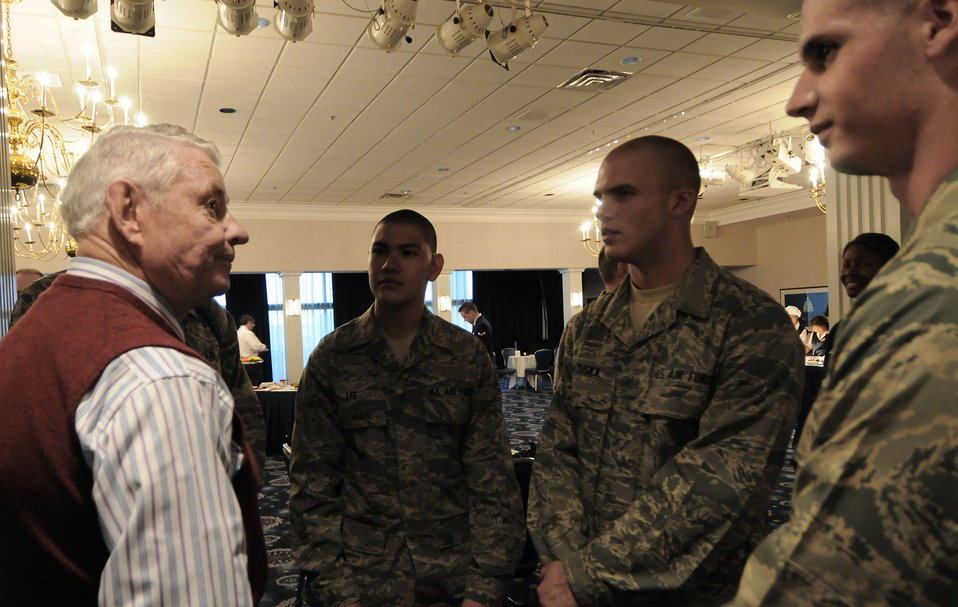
Chief master sergeants of the Air Force gather for dedication

The fifth Chief Master Sgt. of the Air Force Robert D. Gaylor interacts with Air Force Honor Guard trainees after a Chief Master Sergeant of the Air Force Room dedication ceremony May 26 at the Bolling Club at Bolling Air Force Base, D.C. The room was dedicated to honor the Air Force's highest enlisted position and provided an opportunity for the newest generation of Airmen to interact with previous generations.